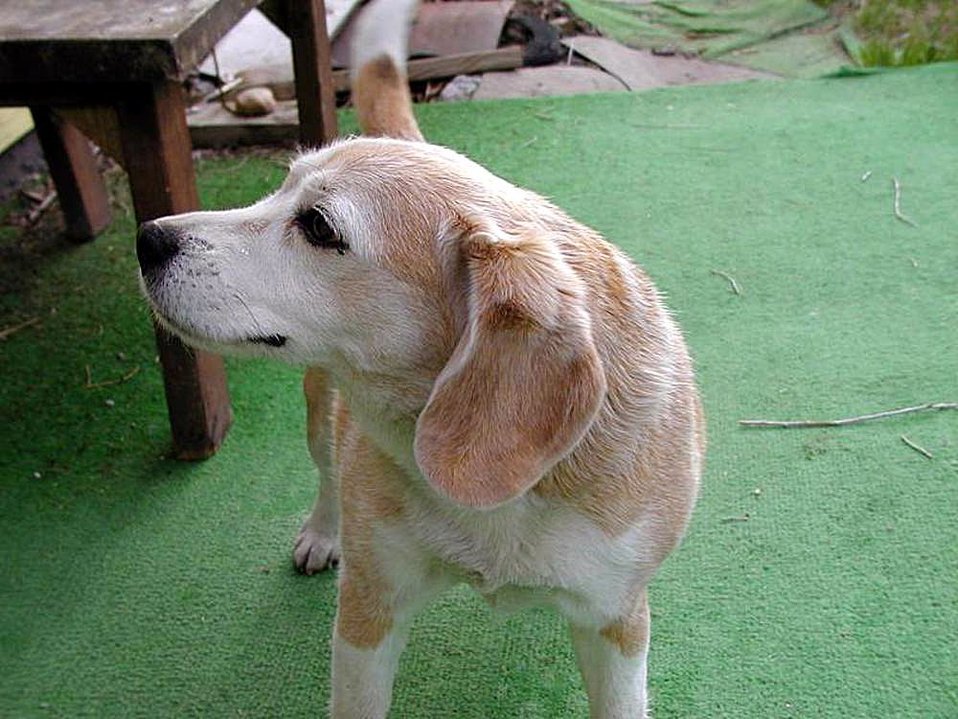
English:
Image title: Dog beautiful Image from Public domain images website, http://www.public-domain-image.com/full-image/fauna-animals-public-domain-images-pictures/dogs-public-domain-images-pictures/dog-beautiful.jpg.html